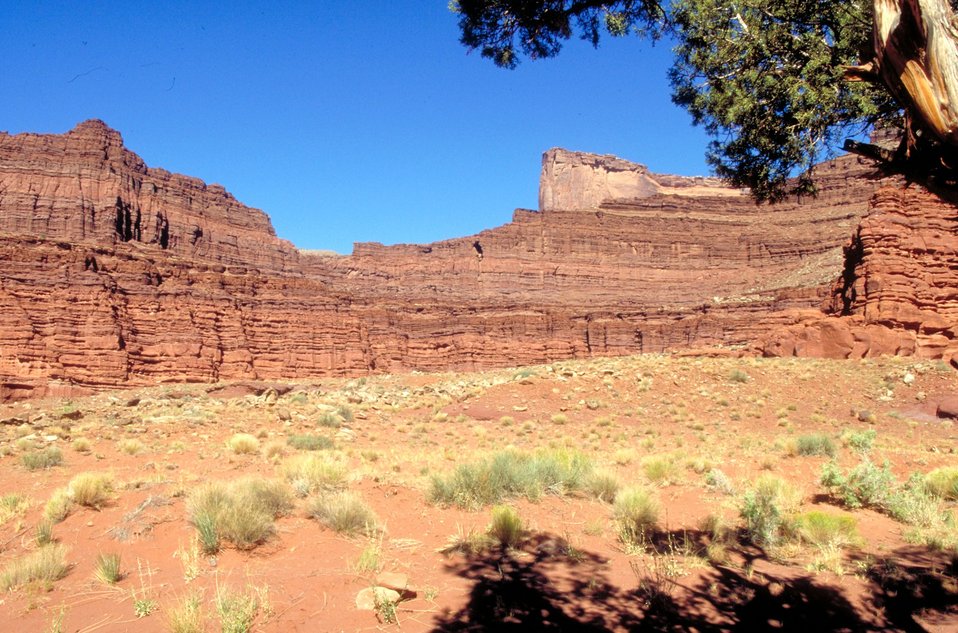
Sandstone and juniper near the Shafer Trail.